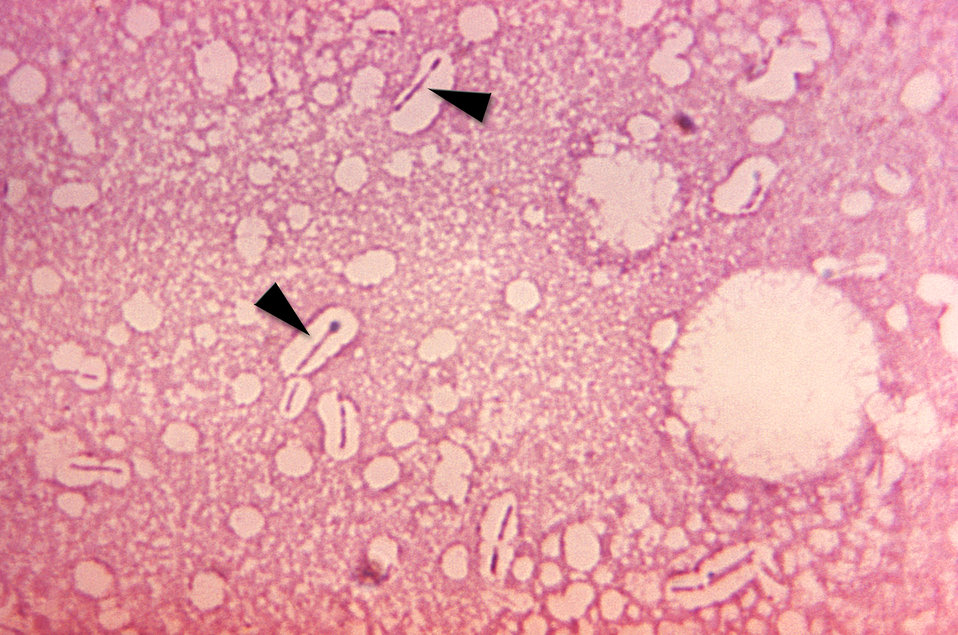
Using a histology technique known as a spore stain, this photomicrograph revealed the presence of gram-positive, anaerobic bacterium, spore-forming Clostridium ramosum, formerly known as Eubacterium filamentosum.